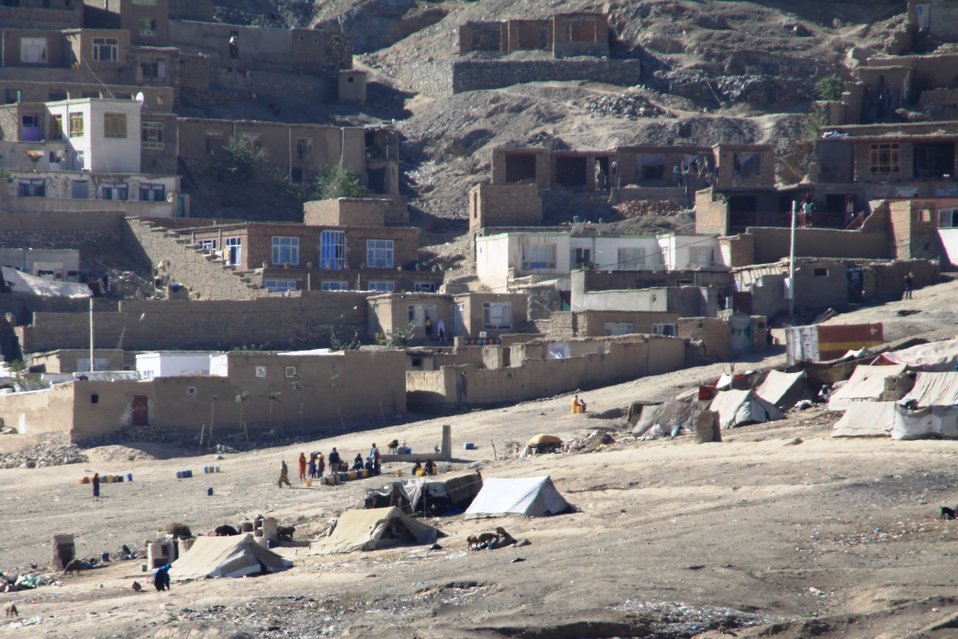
AVIPA Plus Wheat Seed Distribution 101005